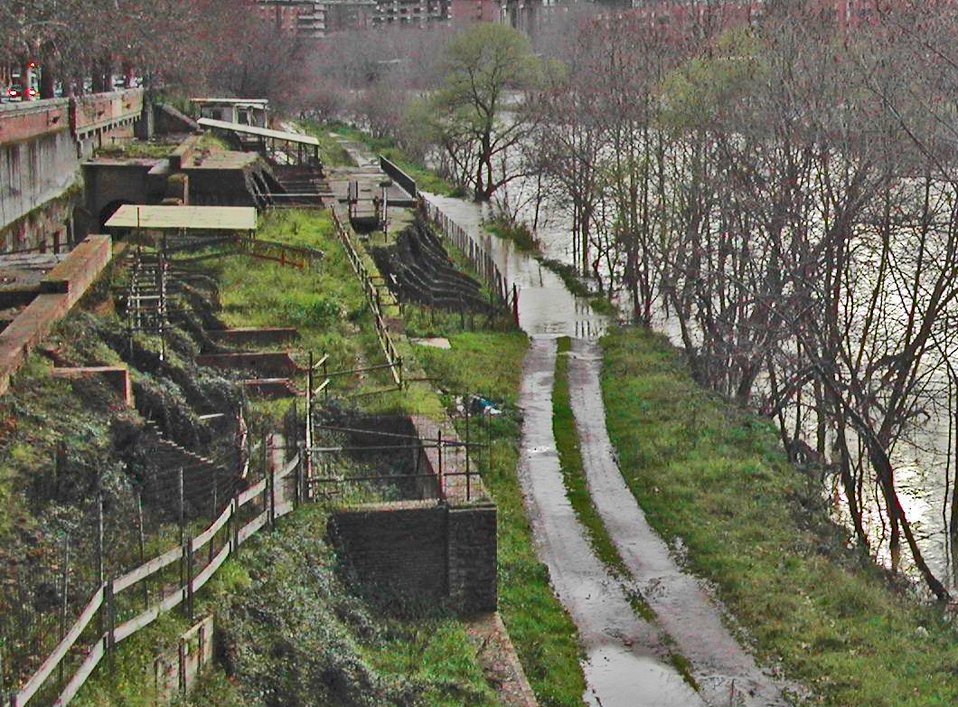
040227 03 tevere PortaPortese